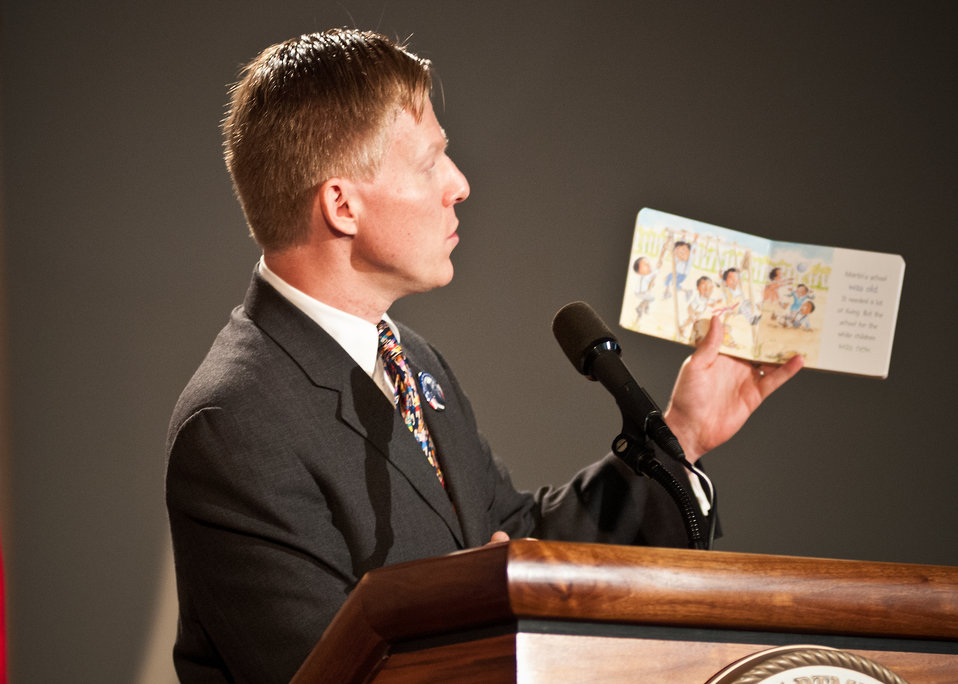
Max Finberg, Director, Faith Based and Neighborhood Partnerships, Master of Ceremonies reads a children’s book of Dr. Martin Luther King’s life to the audience during the National Service Day and Martin Luther King Celebration in honor of Dr. Martin Luther King Jr.’s contributions to the Civil Rights Movement at the United States Department of Agriculture in Washington, D.C., Thursday, January 12, 2012.